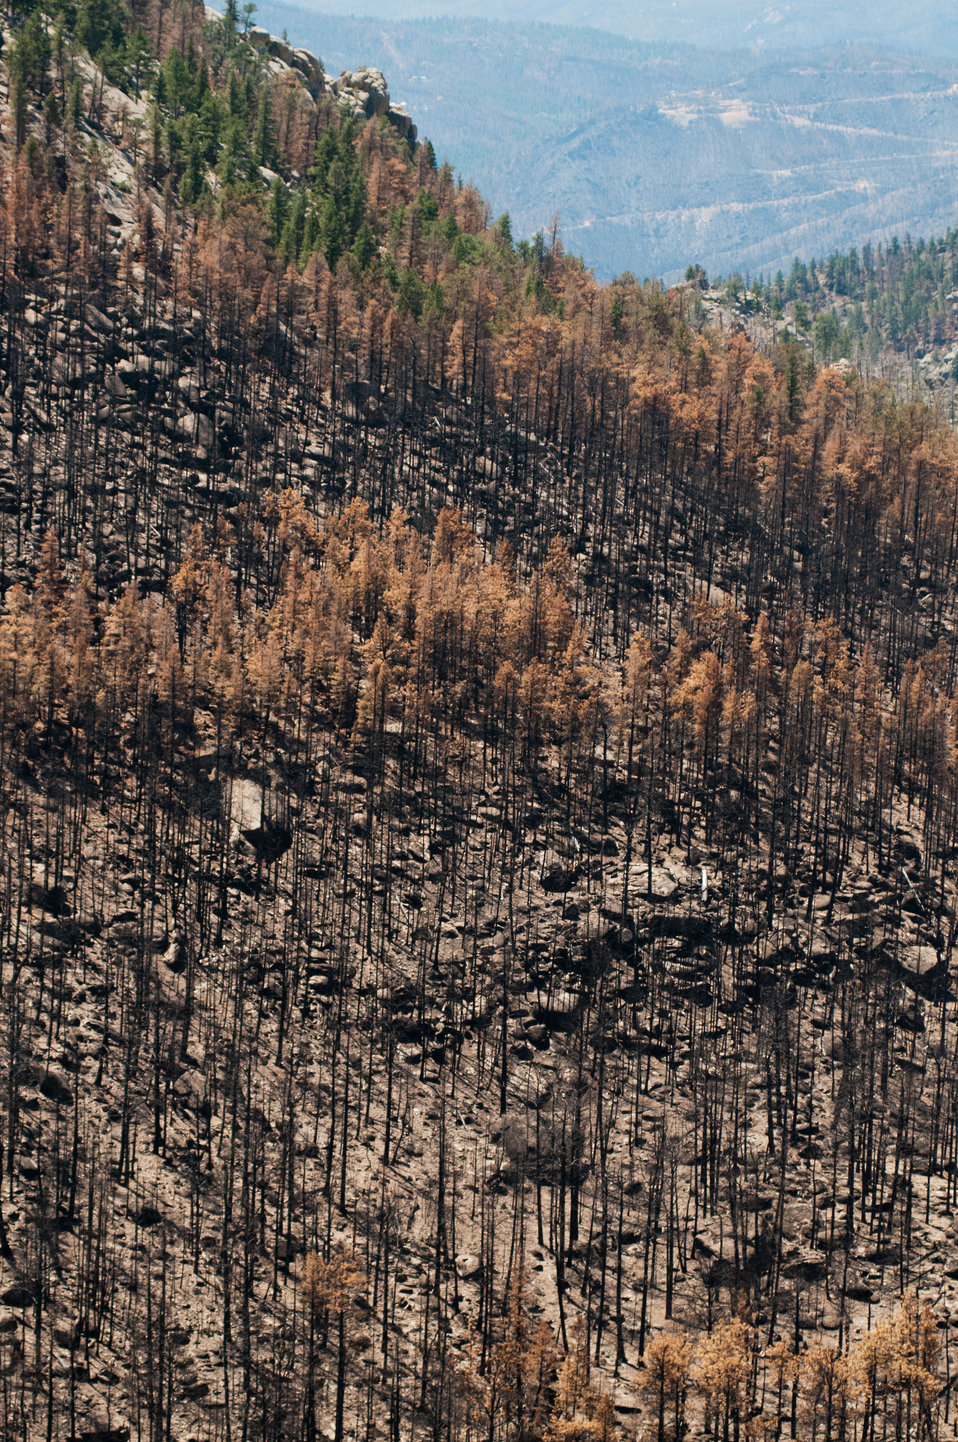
The aerial application of yellow straw continues to mitigate soil and ash runoff from the mountainous terrain leading to Seaman Reservoir, drinking water resource for the City of Greeley, on Friday, July 20, 2012, near Fort Collins, Colo. Red areas are burnt trees with pine needles that will fall tho the ground and form a mulch. Green areas are the remaining healthy trees that provide shade and protection to promote the growth of ground cover plants and shrub. Because of steep terrain, helicopters must be used to quickly deliver 1,800 tons of straw to Forest Service lands, and private and other lands that receive a seed mix and straw to promote ground cover plant growth on ash-covered lands. In total, 1,800 tons of straw will be applied during the 14-day operation. One quarter of the cost was paid by the City of Greeley and the U.S. Department of Agriculture funded the remainder. The Hewlett Gulch Fire was started by a camper’s alcohol stove, on May 14, at the saddle of a picturesque mountain ridge along the Hewlett Gulch Trail of Poudre Canyon, in the Roosevelt National Forest, 60 miles north of Denver. At it’s peak, more than 400 firefighters were battling fires being pushed by 50 mph winds that helped blacken over 12-square-miles of dry ground cover, brush and trees. Many of the trees were already dead and tinder dry from beetle-kill. The water in the reservoir remains clean and clear, while downstream water flow has gone from famous Colorado clear water to nearly black flows of water heavily laden with ash, silt, and burnt debris that recent thunderstorms have already washed down from the mountainsides.